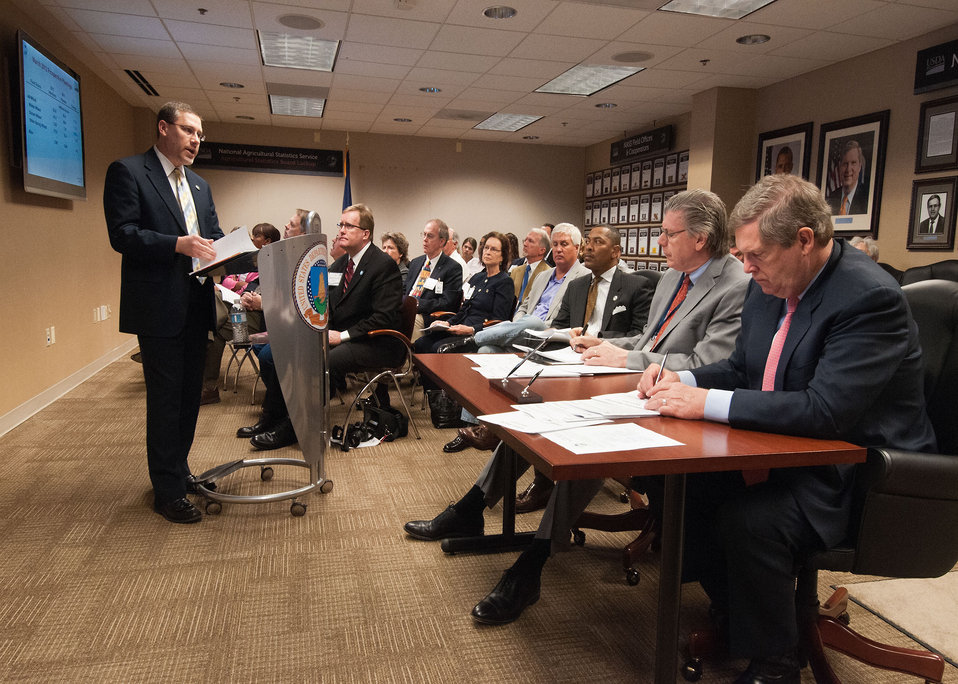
Dr. Joseph Glauber (center), Chief Economist for the U.S. Department of Agriculture and Agriculture Secretary Tom Vilsack (right) take notes during Lance Honig (left), Chief, Crops Branch, National Agricultural Statistics Service explanation of the information in the United States Department of Agriculture’s, National Agricultural Statistics Service, March Agricultural Survey. Secretary Vilsack signed the survey releasing the information at the USDA, NASS Lockup in Washington, D.C., on Friday, March 30, 2012. The NASS lockup is agricultural commodity information held until the Secretary of Agriculture or the Secretary’s Designee has signed and released the information. The signing is the official act of recognizing the information as an official USDA document.